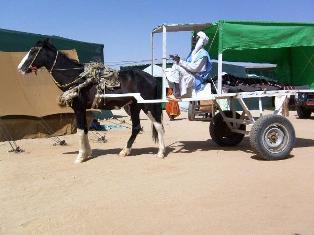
A Man Drives the Mobile O

A drives the Mobile O, IMC's horse-propelled ambulance, in Gaga Camp in eastern Chad on May 10, 2008. In fiscal year 2010, two principal factors drove PRM’s development of a humanitarian strategy for Chad and the region. The first was security. Despite the presence of UN peacekeepers in Chad, both civilians and humanitarian workers have been subjected to an increasing level of banditry: robbery, carjackings, and at times even kidnapping and murder. Now the Chadian government has asked the UN mission to leave the country, an event that would further expose humanitarians and refugees to danger. The second factor was eastern Chad’s qualification as a protracted refugee situation, meaning it has been in existence for over five years. Even with some hopeful political steps towards peace in Darfur in early 2010, the refugees will likely remain in Chad for several more years. With lifesaving services well-established in the camps, therefore, PRM has shifted its focus to programs that provide a longer-term benefit, such as education and vocational training.